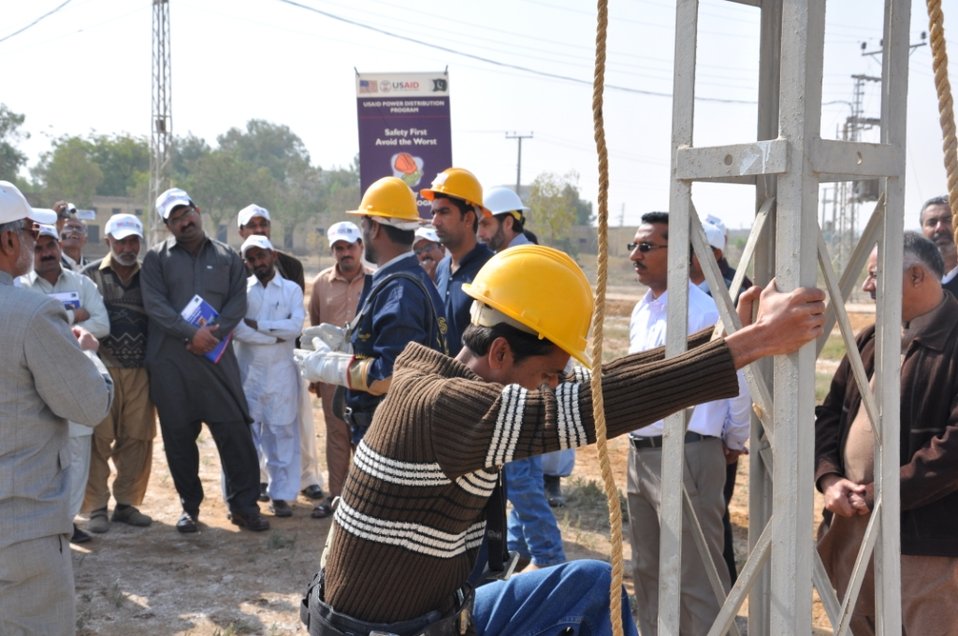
Power Distribution Safety Training Program

Jamshoro, December 18, 2011 - Demonstration being held of lineman safety techniques imparted through the USAID Power Distribution Program's 'Quick Impact Safety Training Program', at the practical demonstration yard at HESCO head office Jamshoro.